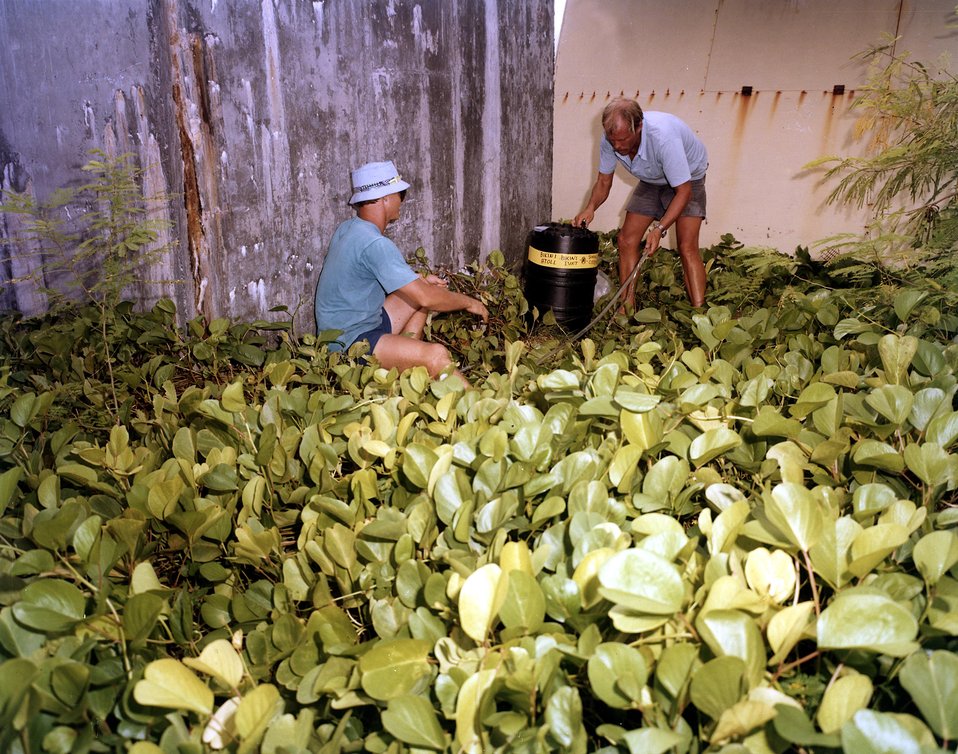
A view during construction of the reactor containment shell to house a 829,000 Kw(e) pressurized water reactor at the Joseph M. Farley Nuclear Plant Unit 2 near Dothan, AL.